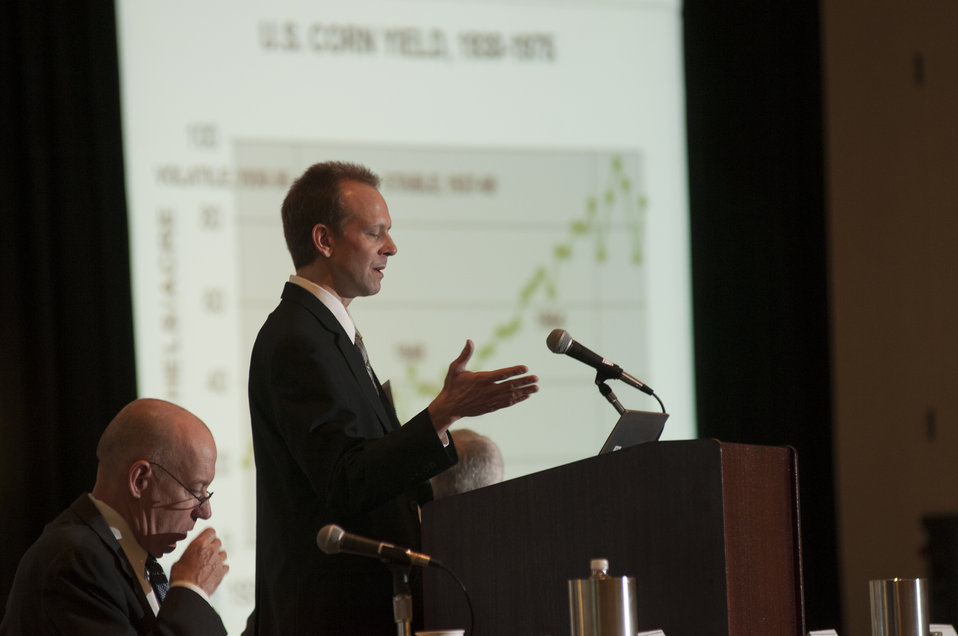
The U.S. Department of Agriculture (USDA) 2013 Agricultural Outlook Forum was held at the Crystal Gateway Marriott Hotel in Arlington, VA on Friday, Feb. 22, 2013. The breakout session on Grains and Oilseeds Outlook analyzed the metrological factors behind last summer’s historic drought, evaluated the effects of summer weather on corn and soybean yields, and provided the 2013 supply and demand outlook for wheat, corn, and soybeans.